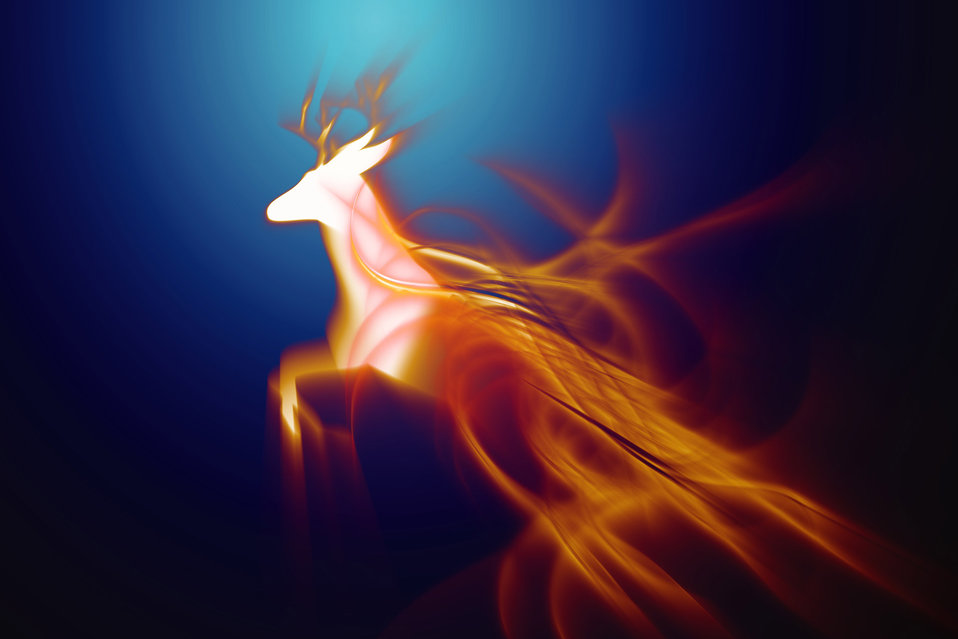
Out of the fire

Abstraction on forest fire.